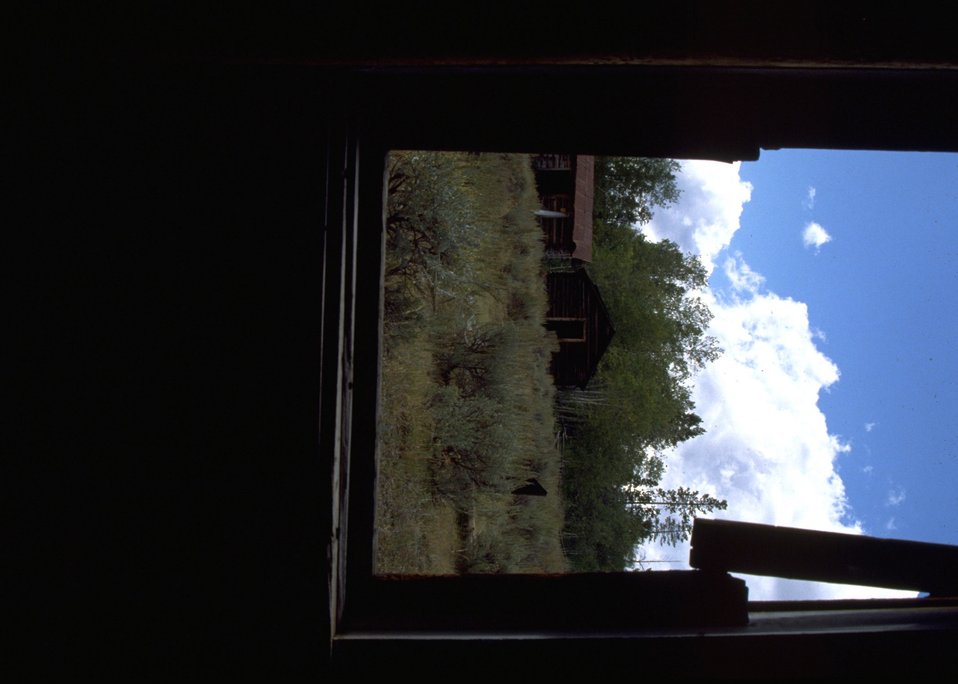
Scenic view from old structure.